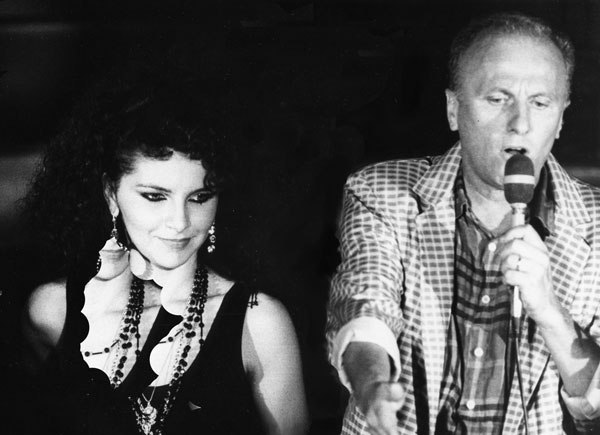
Italiano: Foto con Sahara e Maurizio Seymandi